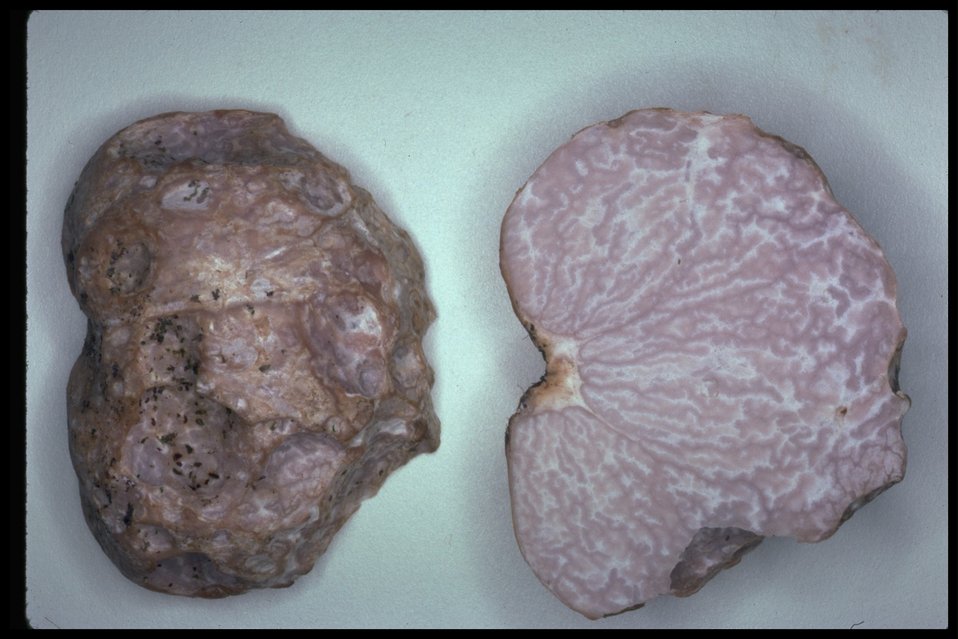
Cazia flexiascus, more commonly called Cazia.